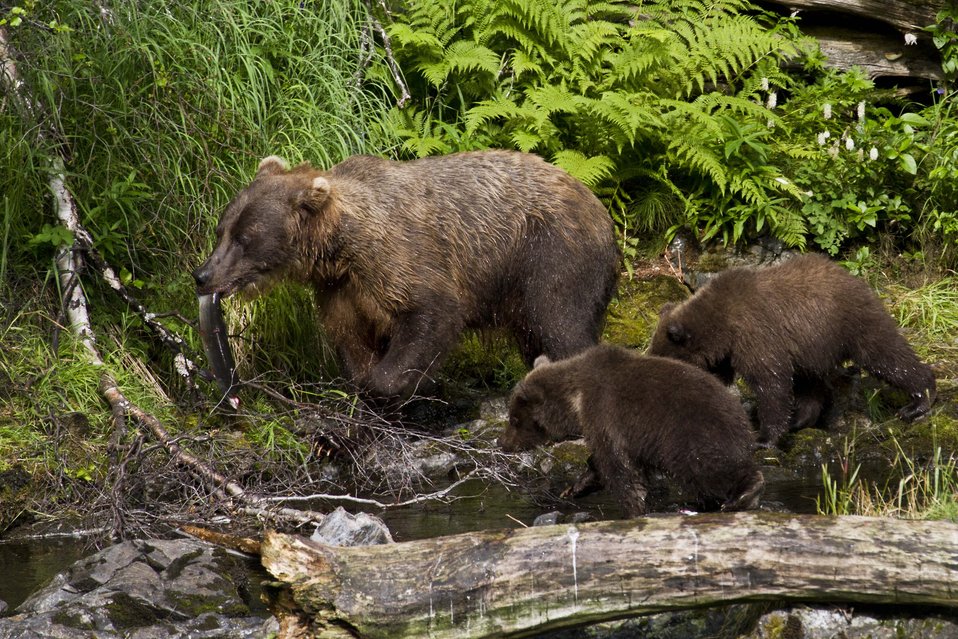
bear sow with salmon and cubs

A brown bear sow prepares to share a fresh-caught salmon with her cubs near the confluence of the Kenai and Russian Rivers in Alaska. Interactions between bears and humans are a favorite topic of the Kenai Refuge Notebook, written by staff at the Kenai National Wildlife Refuge and published weekly in the Peninsula Clarion newspaper since 1999. (Berkely Bedell)